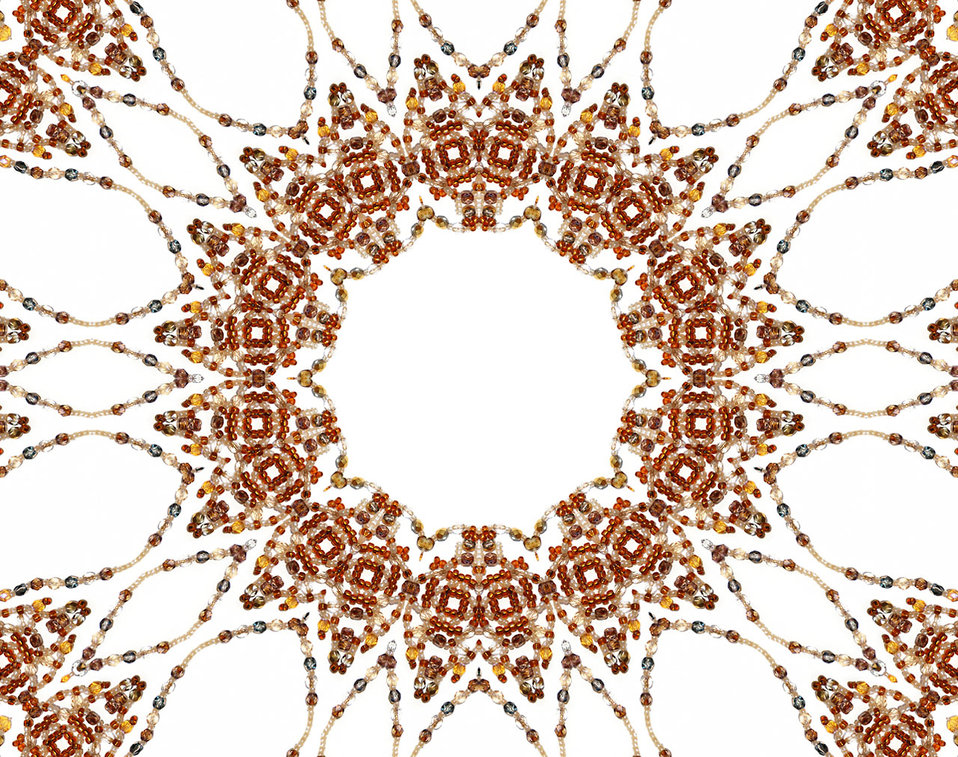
Decorative frame / background

Large decorative frame - beaded, warm colours - amber,brown,gold.